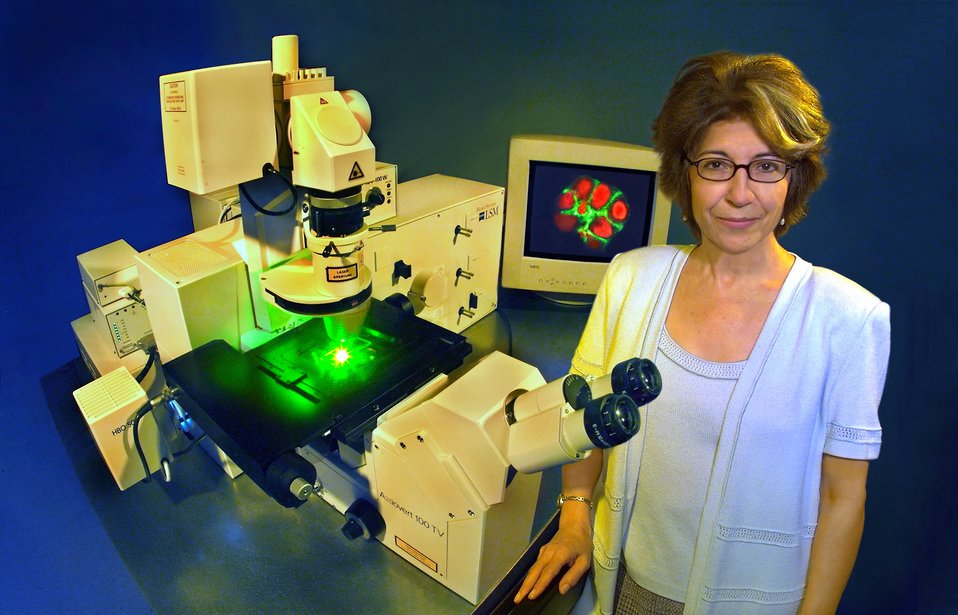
At LBNL, DOE Low Dose Radiation Effects Program- Non- Targeted Effects Project: employs systems genetic analysis of the relative contribution of non-targeted vs targeted radiation effects on cancer risk. Shown is the confocal microscope.